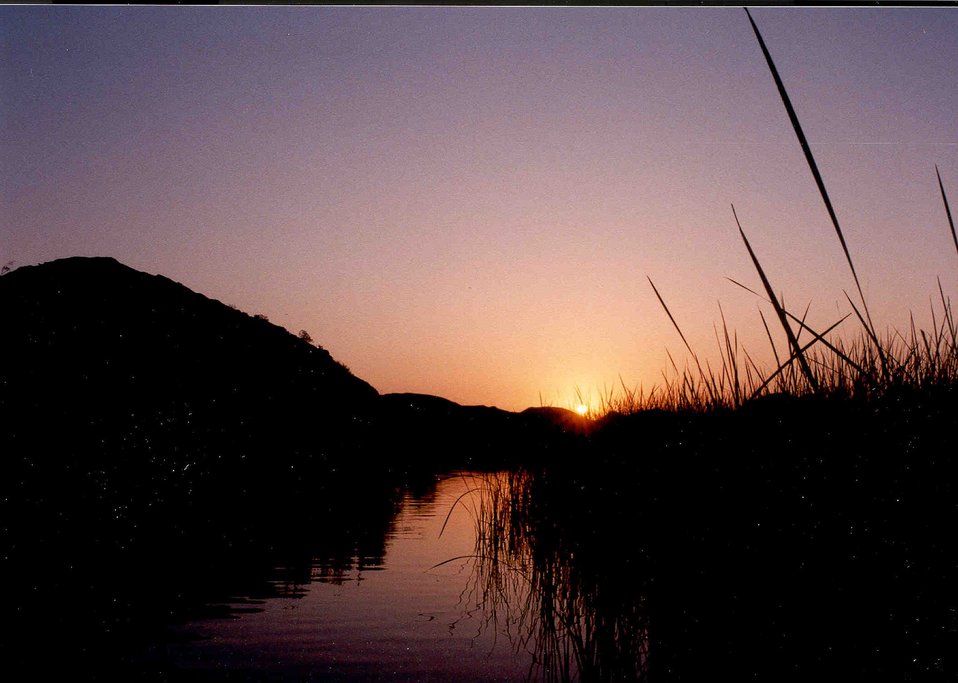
Sunrise at Squaw Lake